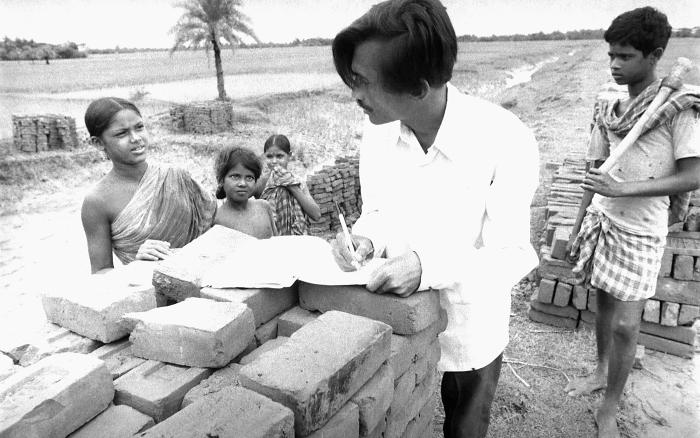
Recording the responses of all village residents was taken very seriously, whether they were young children, or adult respondents. In this case, a local smallpox eradication team volunteer was questioning a young girl, her sibling and a friend in order to see if they were aware of any smallpox cases in the community. It was an 8 year old child named Bilkisunnessa, who'd reported the last known naturally occurring case of smallpox, i.e., variola major, Rahima Banu.